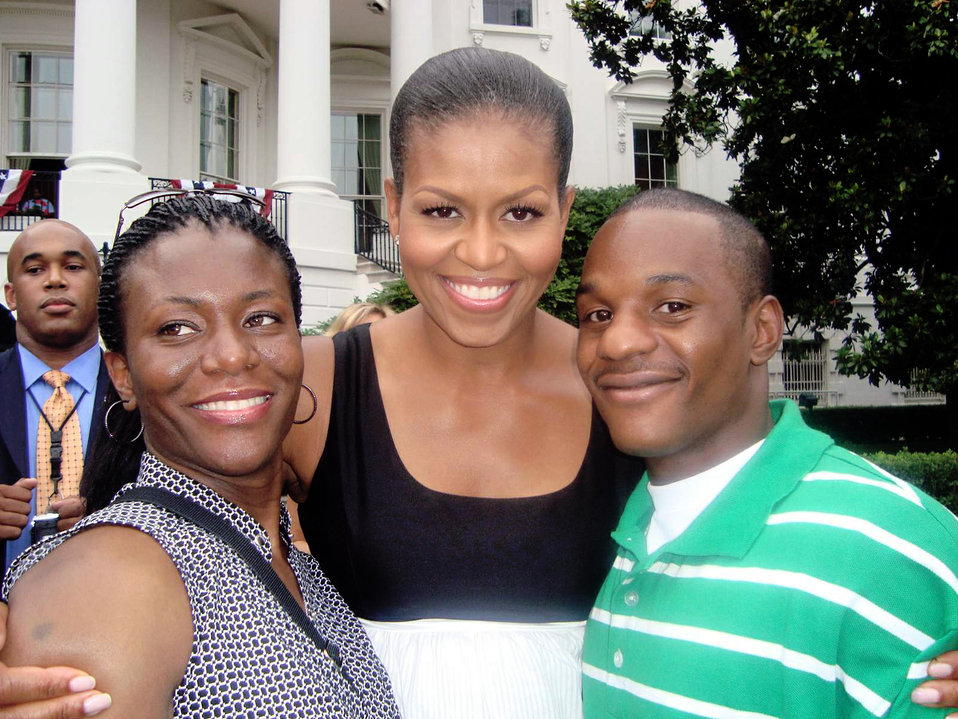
Air Force wounded warrior visits White House

Senior Airman Duane Dunlap (right) and Staff Sgt. Theda Franklin (left) visit with First Lady Michelle Obama at the White House during a Salute to the Military event on the Fourth of July. Airman Dunlap is an Air Force wounded warrior who was chosen to attend the event that included dinner, fireworks and a chance to meet the president and first lady. Sergeant Franklin is assigned to the 59th Medical Wing at Lackland Air Force Base, Texas.